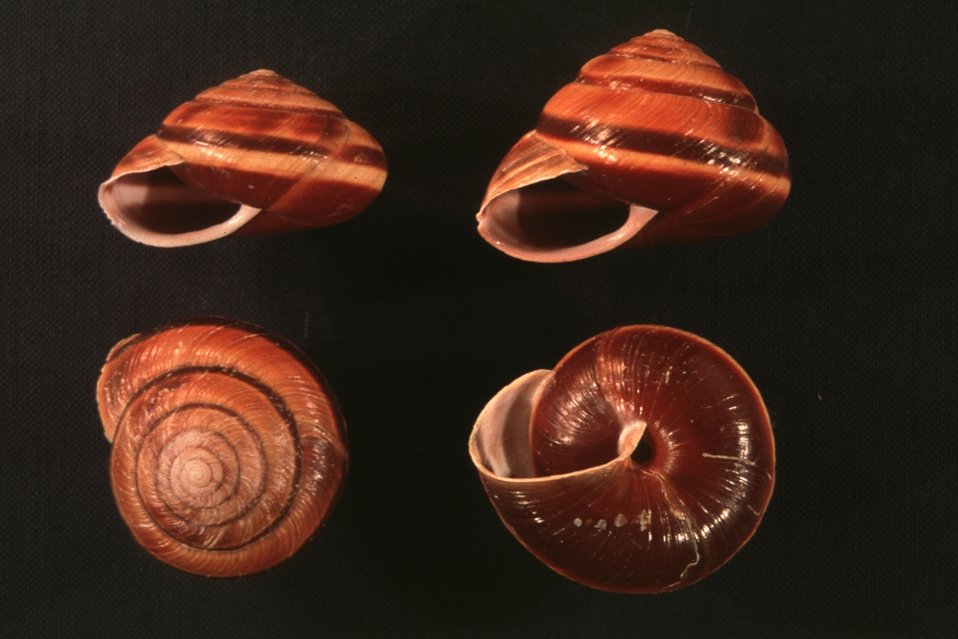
Pacific Sideband (Monadenia fidelis fidelis), not a survey and manage.